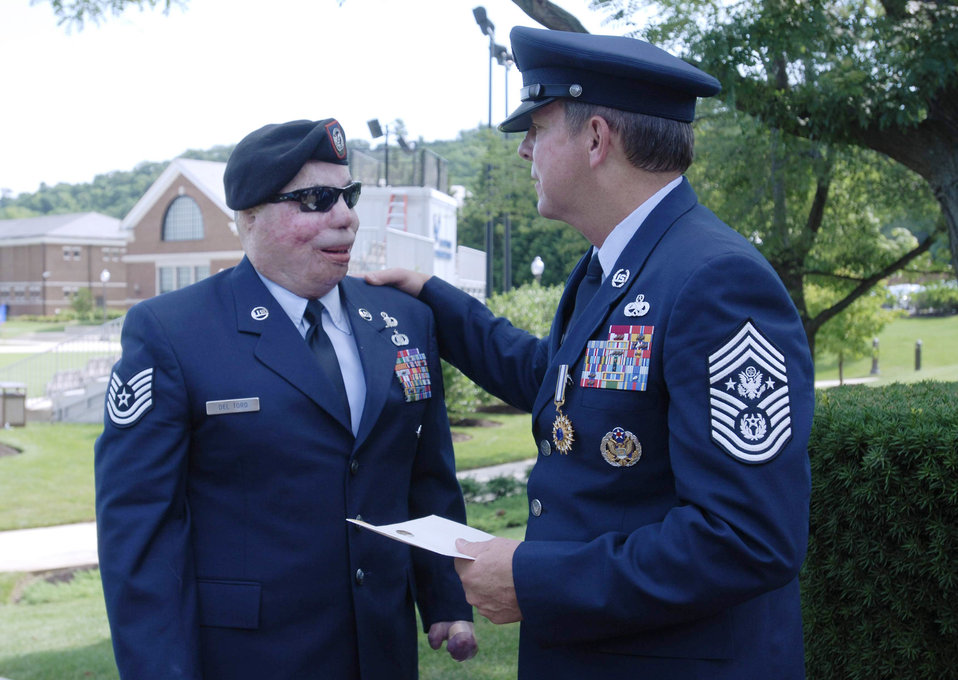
Air Force bids farewell to Chief McKinley, hails Chief Roy

Chief Master Sgt. of the Air Force Rodney J. McKinley chats with Tech. Sgt. Israel Del Toro June 30 at Bolling Air Force Base, D.C. Chief McKinley retired and Chief Master Sgt. of the Air Force James A. Roy was appointed as the Air Force's 16th top enlisted leader.